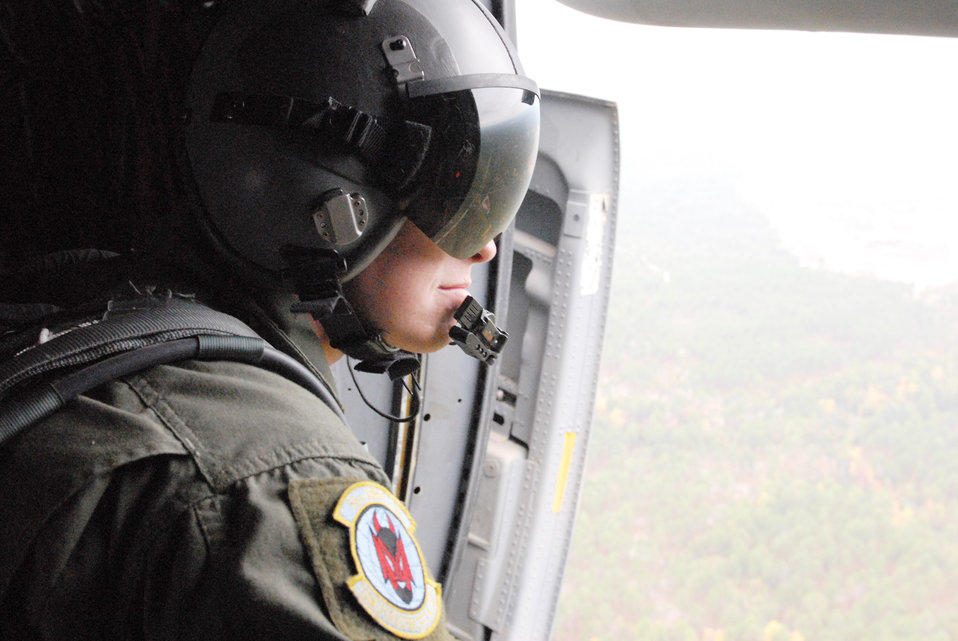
Little Rock officials lead joint force training effort at exercise

Senior Airman Bart Johnson surveys the terrain of the drop zone as part of Joint Forcible Entry Exercise 10-01 Oct. 28, 2009, at Pope Air Force Base, N.C. The JFEX focused on cohesive training between the Air Force and Army to re-establish forcible entry capability through airpower. Airman Johnson is a 50th Airlift Squadron C-130H3 loadmaster from Little Rock AFB, Ark.